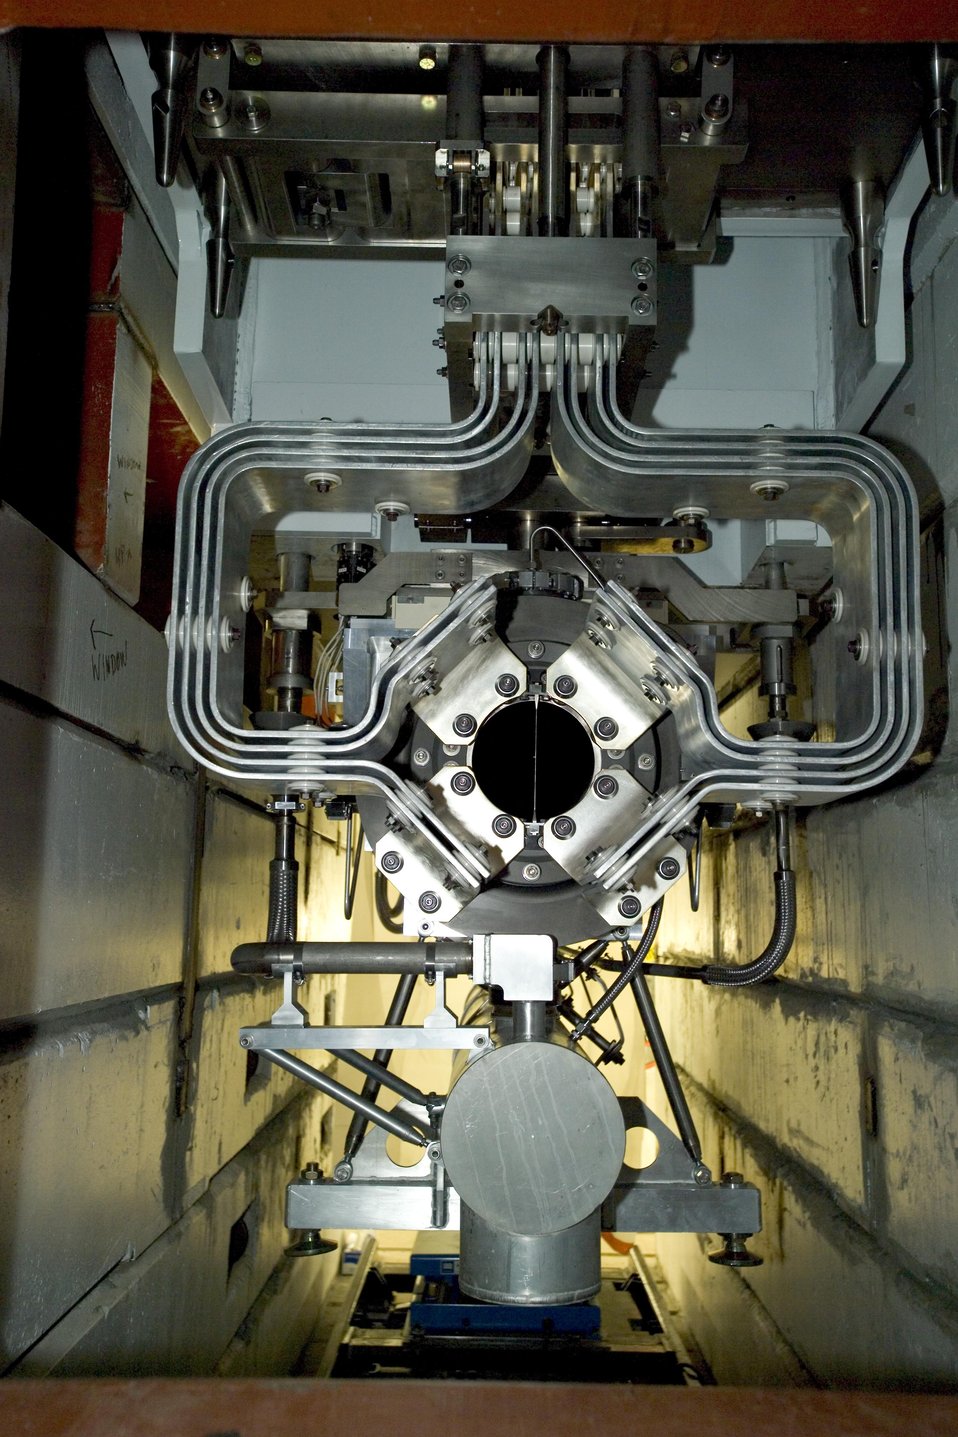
FERMILAB'S NUMI TARGET HALL UNDERGROUND CONSTRUCTION-HORN AND ALIGNMENT MODULE.

IN AN UNDERGROUND SYSTEM OF HALLS, SHAFTS AND TUNNELS AT THE MAIN INJECTOR PROJECT, THE NUMI PROJECT IS THE FIRST STEP TOWARD BUILDING AN EXPERIMENT AT FERMI THAT WILL DETERMINE WHETHER NEUTRINOS, WHICH ARE GHOST-LIKE PARTICLES TRAVERSING THROUGH THE UNIVERSE AT/OR NEAR THE SPEED OF LIGHT, HAVE MASS.